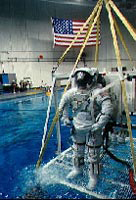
Colonel Guion S. Bluford Jr.

1970's -- Guion S. Bluford Jr. prepares for his NASA mission at the Space Center in Houston, Texas.